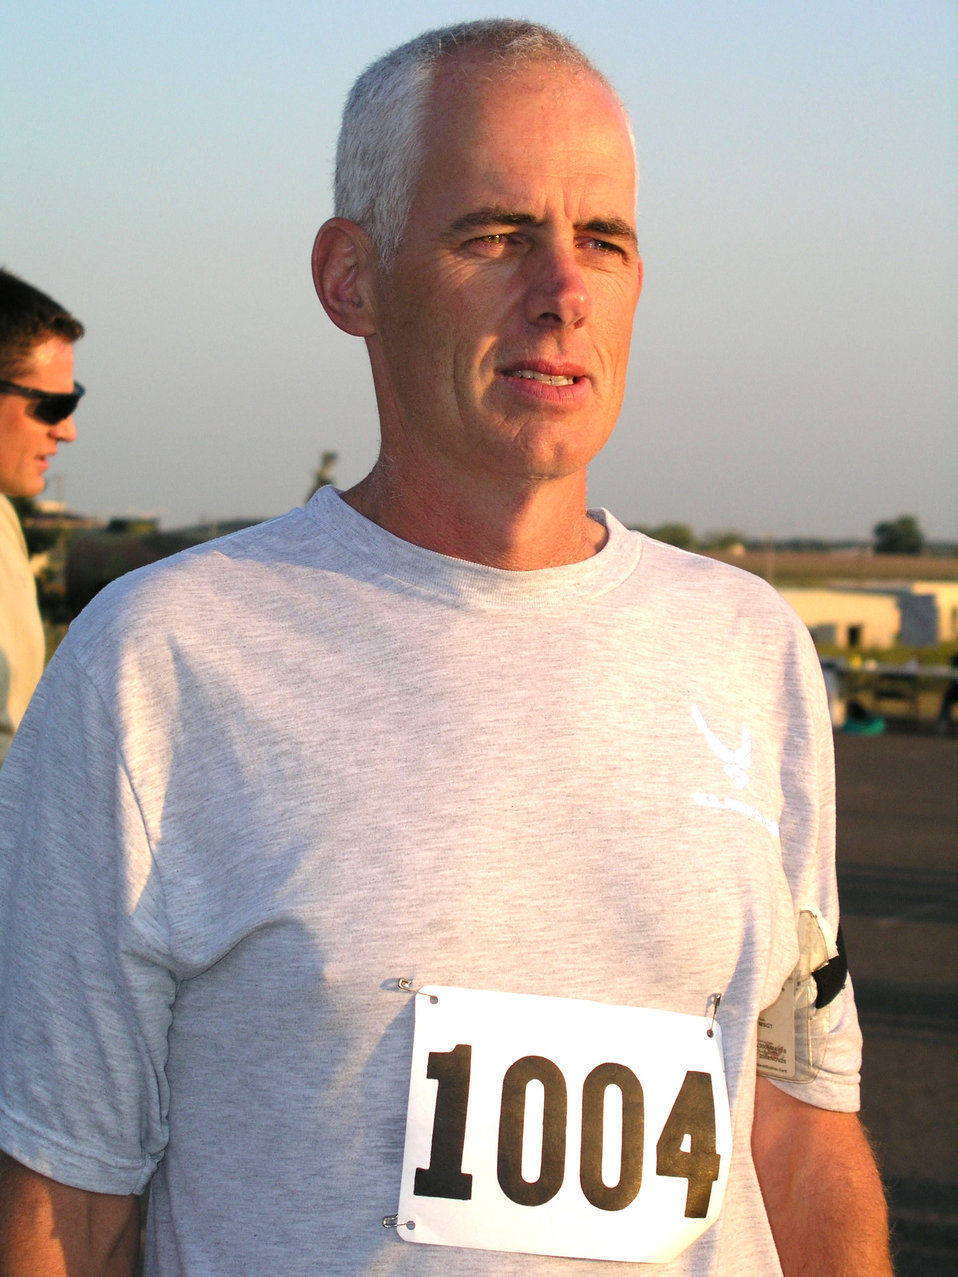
Reservist gets 'fit to fight'

Master Sgt. Matt Thomas prepares to run a 10K. Sergeant Thomas, a jet engine mechanic for the 513th Aircraft Maintenance Squadron at Tinker Air Force Base, Okla., in 14 months increased his overall fitness score from 43 to 98.89.